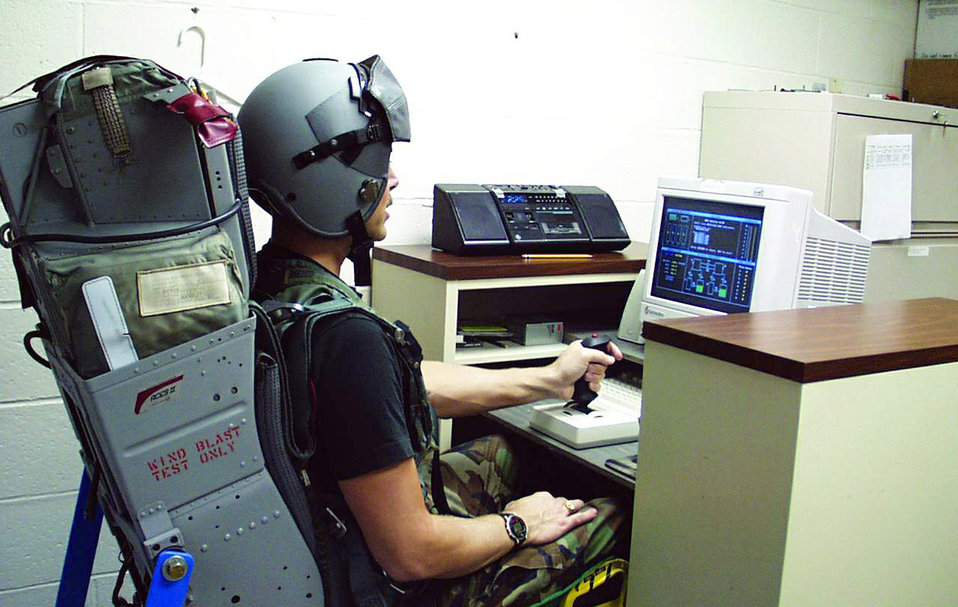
Test subject

WRIGHT-PATTERSON AIR FORCE BASE, Ohio -- A volunteer test subject sits in a mock-up ejection seat at the Air Force Research Laboratory's human effectiveness directorate here. The seat is fitted with a special device that measures how much pressure is being exerted on the seat cushion and where the